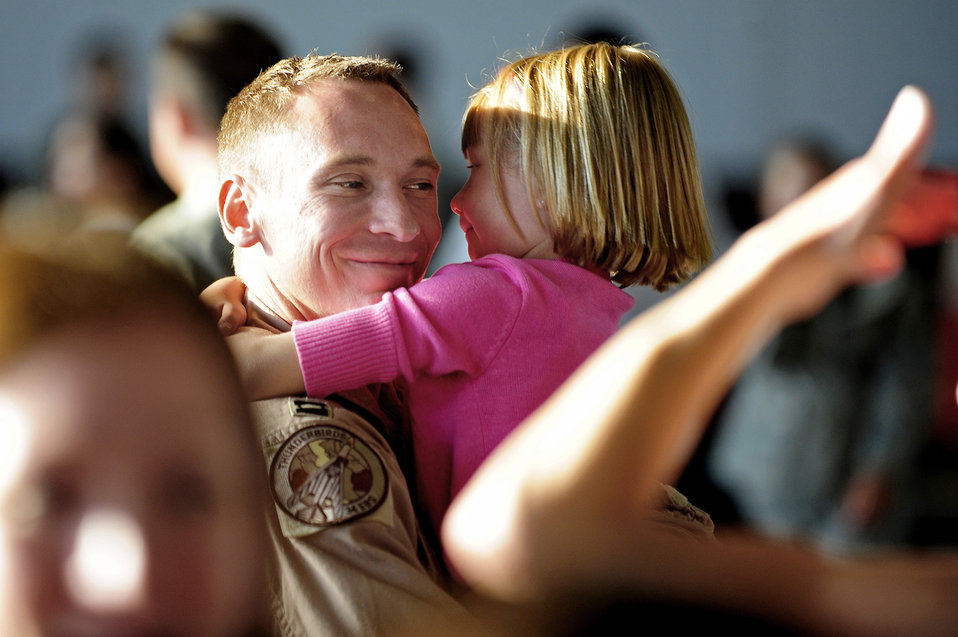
Talking it out -- getting through deployment

Staff Sgt. George Munoz hugs his wife, Christan, July 28, 2010, at Ellsworth Air Force Base, S.D., after returning from a deployment. Sergeant Munoz is an armament maintainer assigned to the 28th Munitions Squadron.